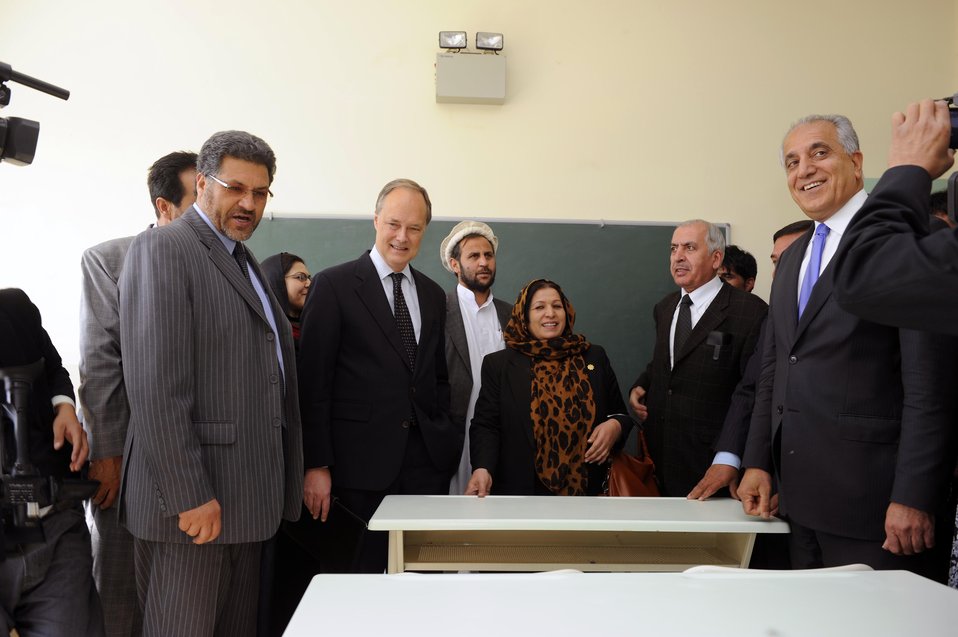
U.S. Deputy Ambassador to Afghanistan James B. Cunningham, Afghan Minister of Education Abdul Rahim Wardak and visitng former U.S. Ambassador to Afghanistan Zalmai Khalilzad officially inaugurated the newly rebuilt Ghazi High School in West Kabul October 23, 2011. Former alumni of the school include both Ambassador Khalilzad and Afghan President Hamid Karzai. The school was destroyed during 30 years of fighting in Afghanistan, and was refurbished by the U.S. Agency for International Development. (Department of State)